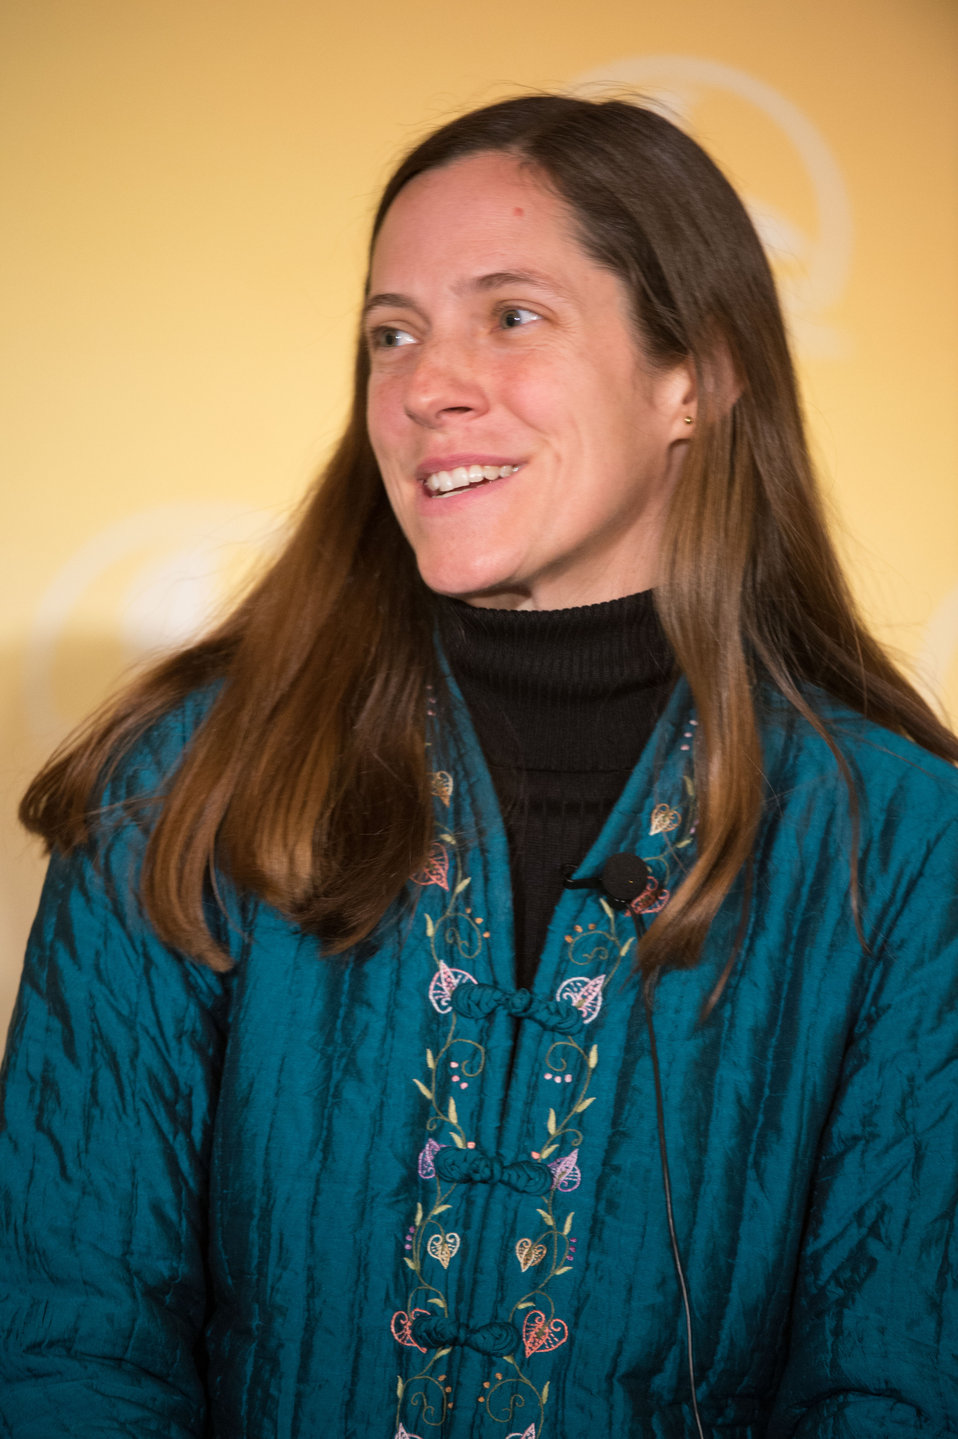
Young Farmers - Unlimited Opportunities panelist National Young Farmers Coalition Interim Director Emily Oakley at the 2014 Agricultural Outlook Forum in Arlington, VA., on Thursday, Feb. 20, 2014. The U.S. Department of Agriculture's (USDA) annual Agricultural Outlook Forum brings together the agricultural community to discuss policy, trade, science, rural development, and the economic outlook for the coming year. The Forum also focuses on forestry, health and nutrition issues, and the changing dynamics and face of rural America.USDA photo by Bob Nichols.